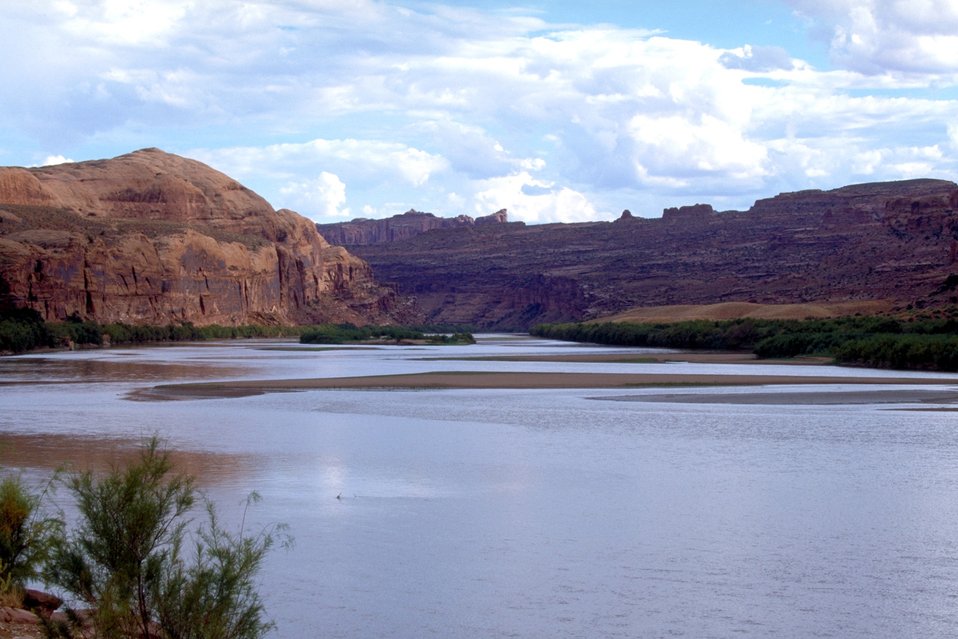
Colorado River near Moab, Utah.